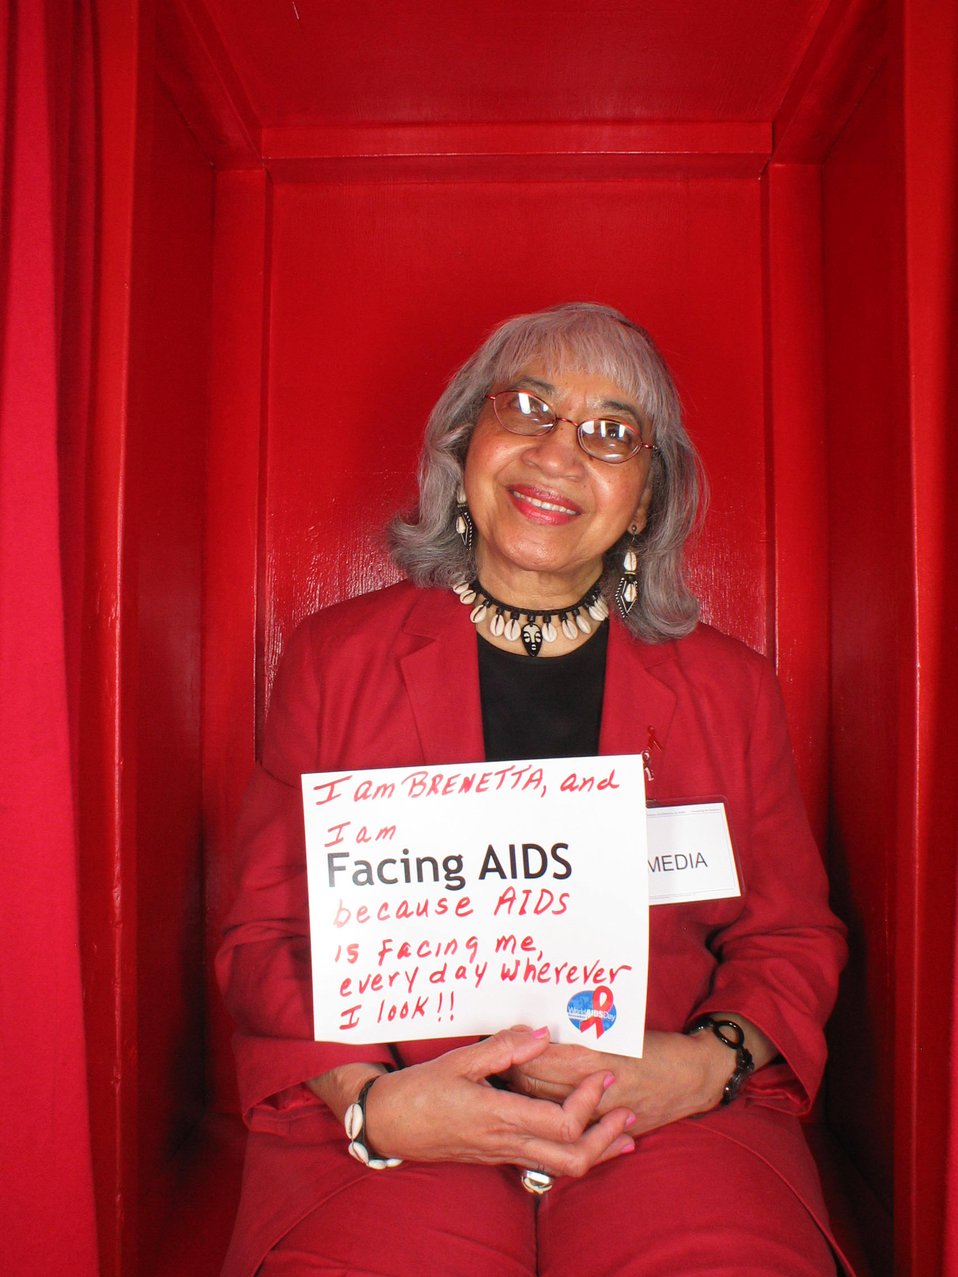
I'm Facing AIDS because AIDS is facing me every day wherever I look!!!